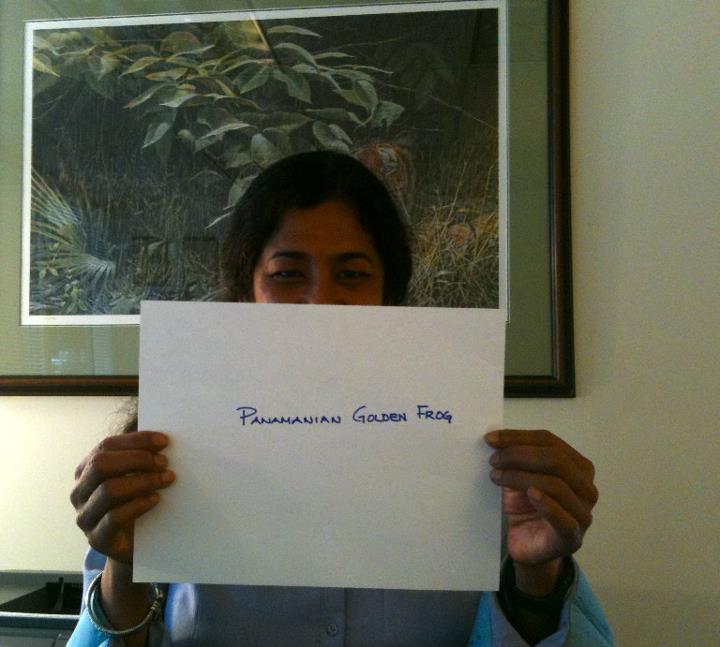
Krishna Roy, 'Panamanian Golden Frog,'

International Affairs participates in FFI's In Our Hands campaign